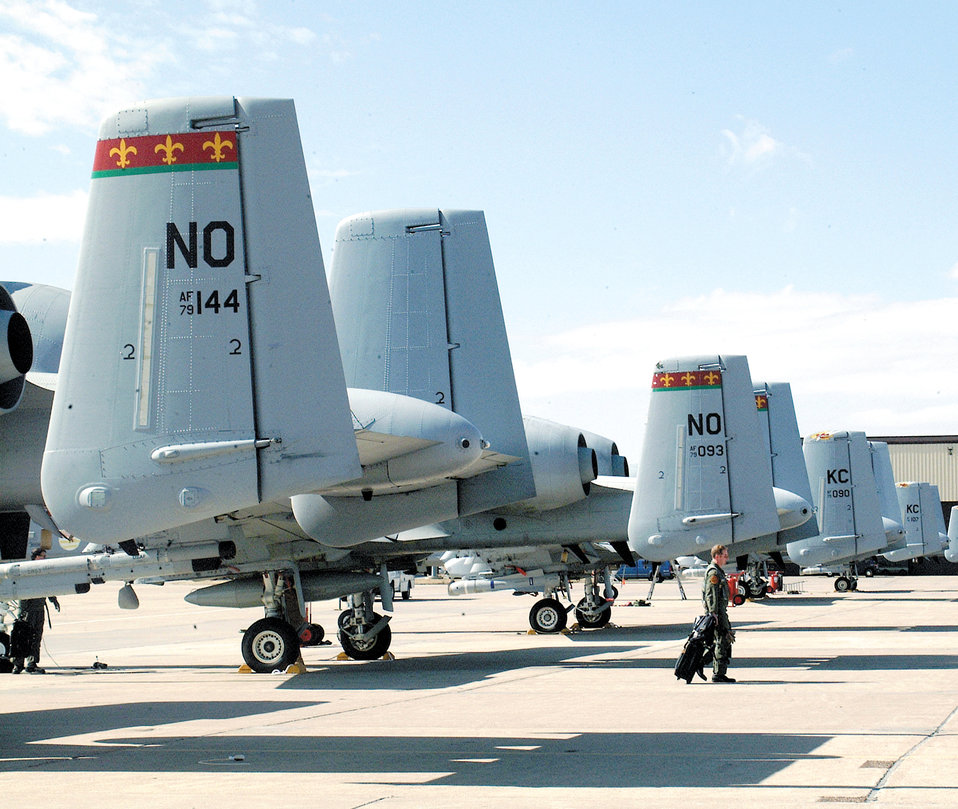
442nd Fighter Wing's newest aircraft

A pilot walks away from an A-10 Thunderbolt II he just delivered to the 442nd Fighter Wing at Whiteman Air Force Base, Mo., Friday, February 24, 2006. The 442nd FW is receiving nine additional aircraft as part of the base realignment and closure decision, bringing the total number of aircraft in the wing to 24. The pilot and A-10 are from the 926th Fighter Wing, based near New Orleans. The A-10s are on loan to the 442nd pending final acceptance procedures.